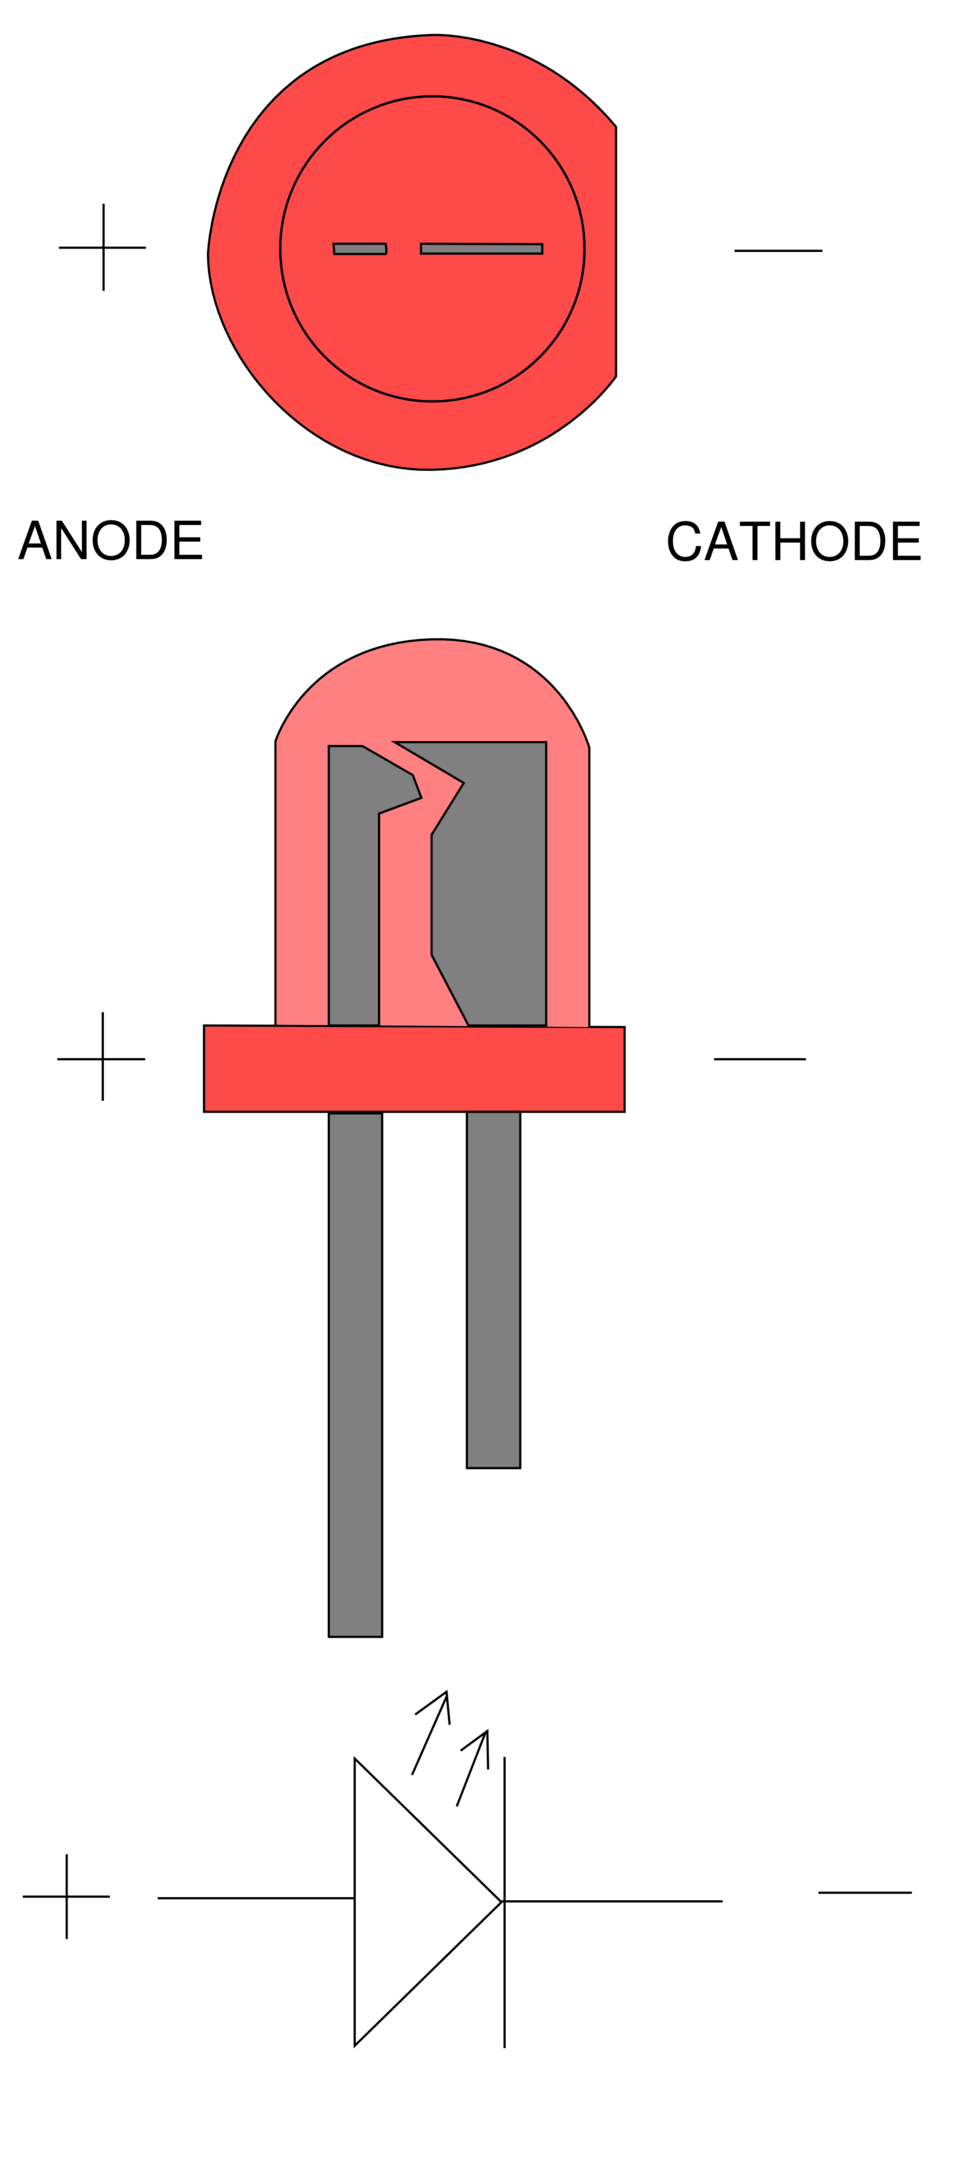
Anode and cathode of LEDs. LEDの極性。